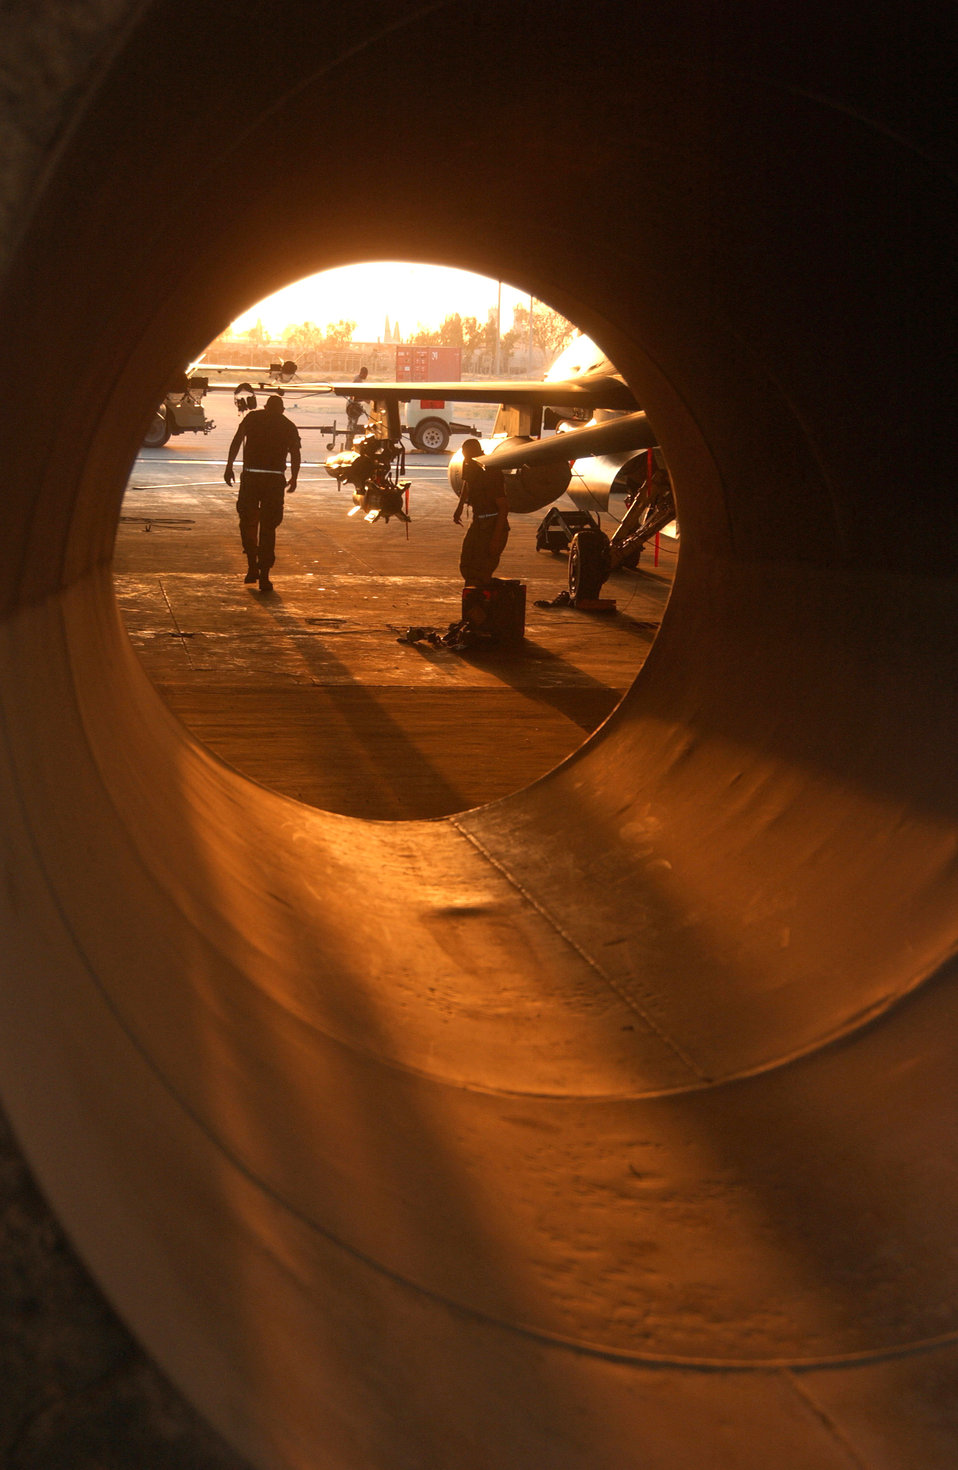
Sunset

The sun sets through an exhaust manifold of a hardened shelter that houses servicemembers from the 421st Expeditionary Aircraft Maintenance Unit on Balad Air Base, Iraq, on July 8.